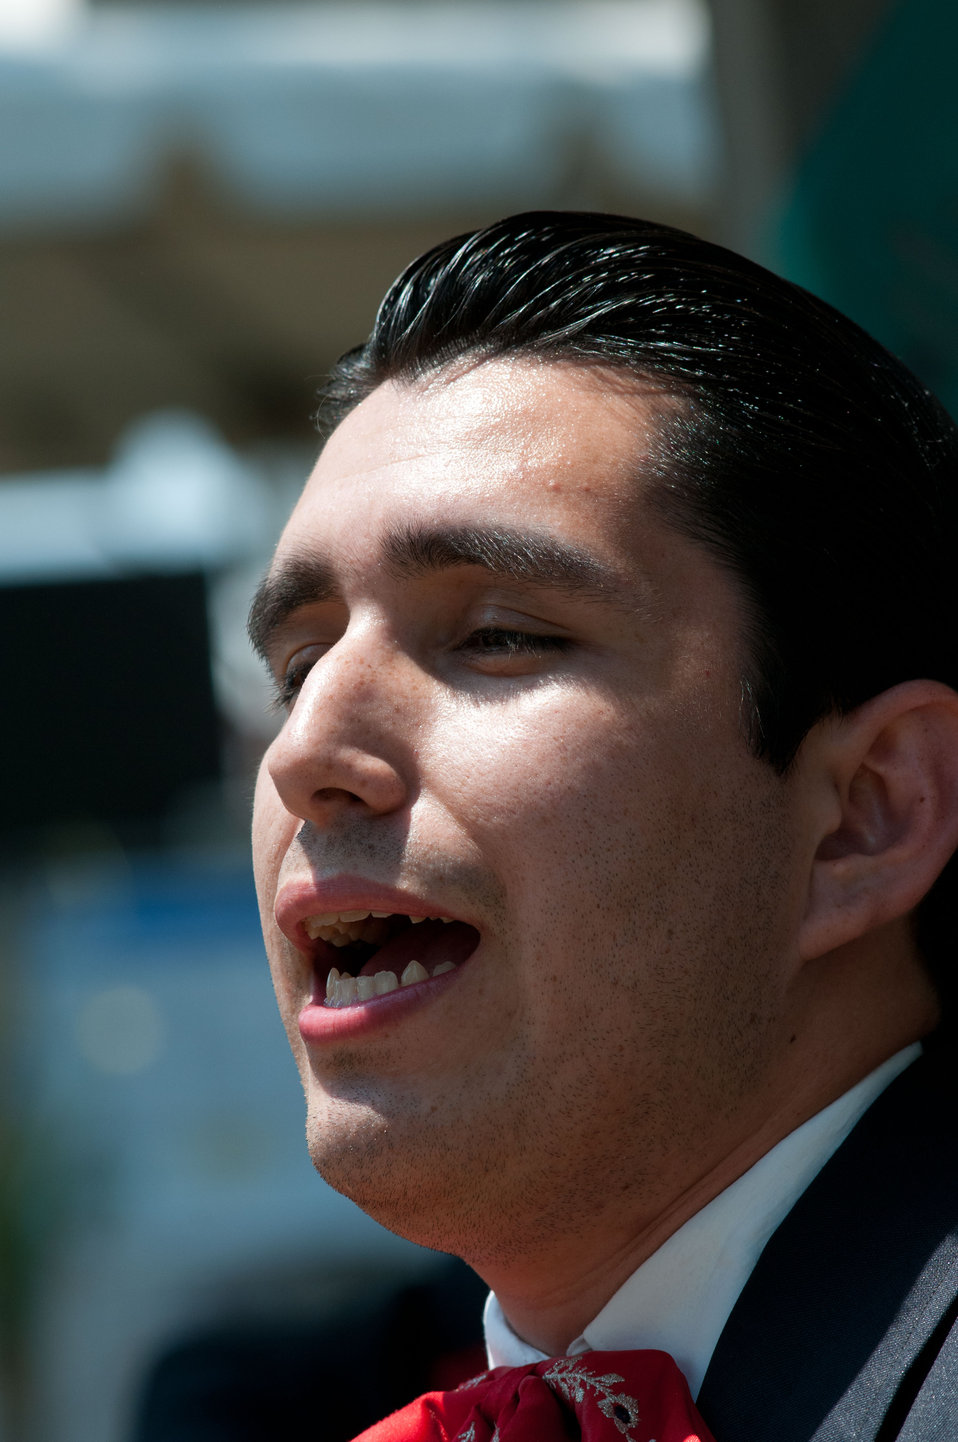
Mariachi Jose Rangel sings during the 2012 Smithsonian Folklife Festival for the University of Texas - Pan American tent, sharing the Mexican Pan American musical traditions, on the National Mall in Washington, D.C., on Wednesday, June 27, 2012 One of the three themes this year is “Campus and Community.” It celebrates the 150 years of the USDA and the Land-Grant University System. The U.S. Department of Agriculture (USDA) and the Land-Grant system extend education across the country, contributing to American agriculture success and rural prosperity. “Campus and Community” has demonstrations, discussions, hands-on activities, and entertainment to that showcase the many ways that this partnership works to improve American agriculture and rural life.